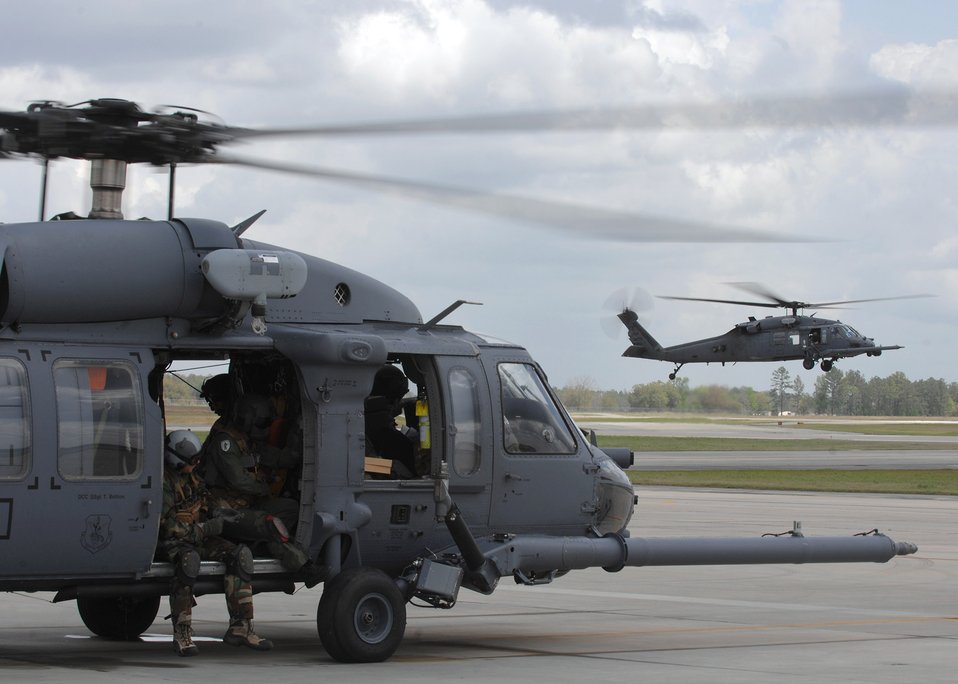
HH-60G Pave Hawk

Airmen prepare for a flight on an HH-60G Pave Hawk April 1 at Moody Air Force Base, Ga. The HH-60G is a twin-engine medium-lift helicopter used in combat search and rescue missions.